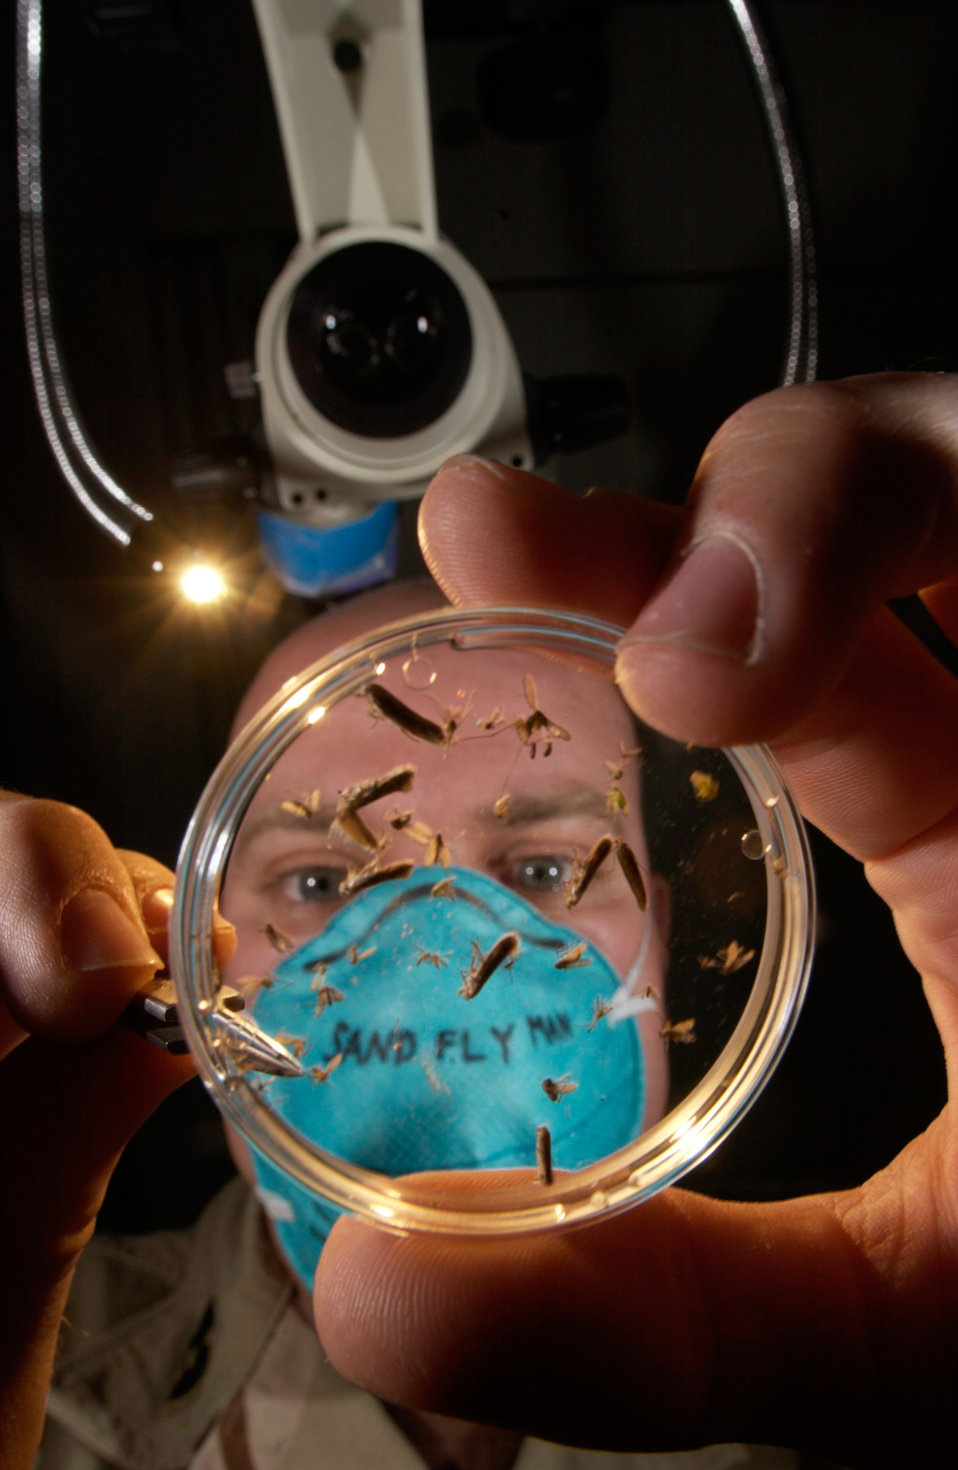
Sand fly man

TALLIL AIR BASE, Iraq -- Capt. Keith Blout, an entomologist, from the School of Aerospace Medicine, Brooks City-Base, Texas, is deployed to the 332nd Expeditionary Medical Group. He is sorting sand flies and mosquitoes from a collection of insects gathered in insect light traps set here. Additionally, samples from throughout the region are sent to him for analysis to identify DNA of the parasites which cause cutaneous leishmaniasis.